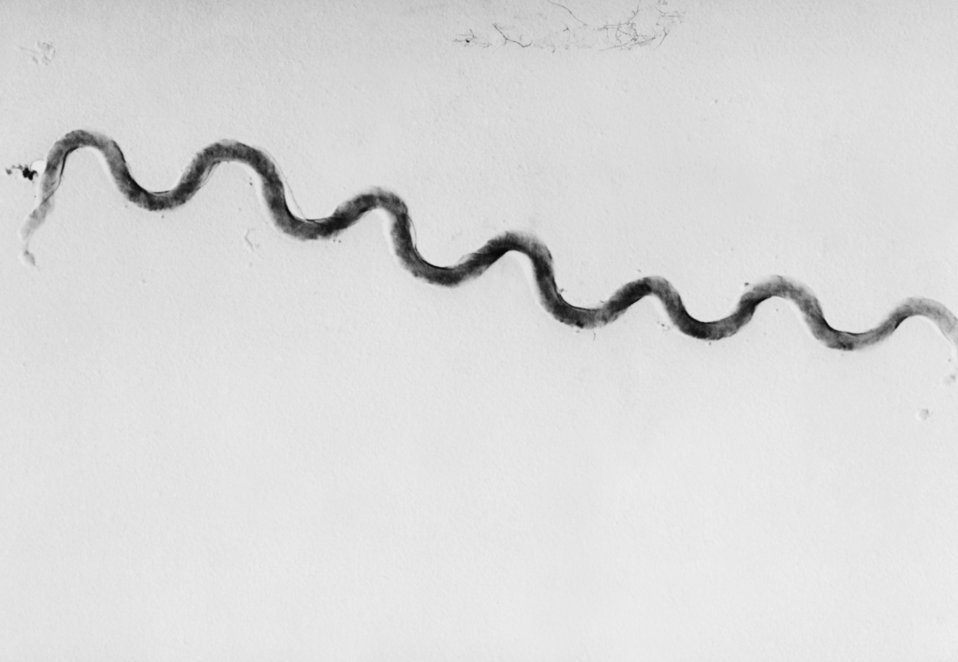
This photomicrograph depicts a Treponema pallidum bacterium, a spirochete 5 - 15 micrometers in length, which is the causative agent of syphilis.